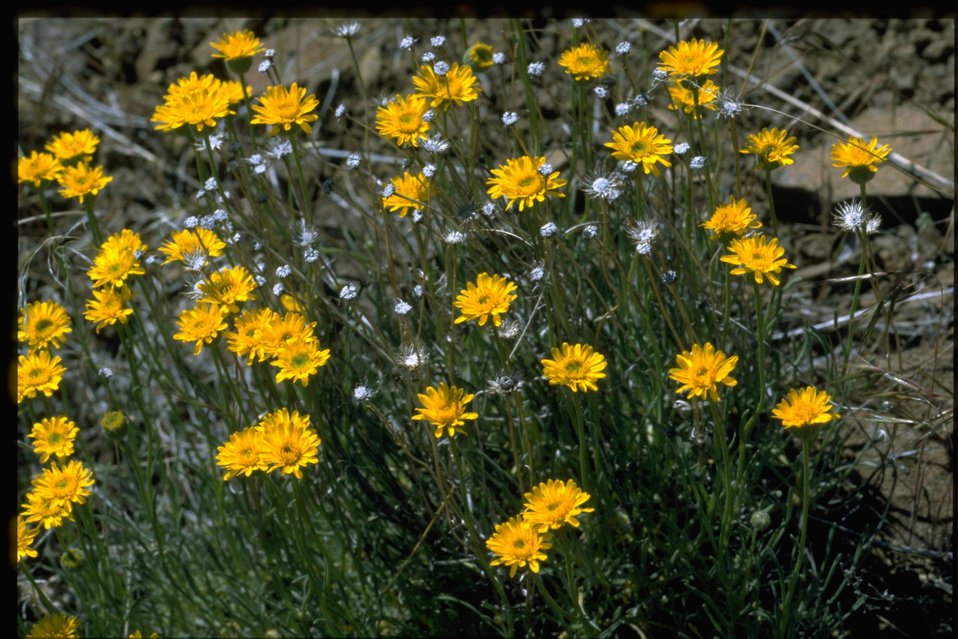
Medium shot of desert yellow fleabane (Erigeron linearis).